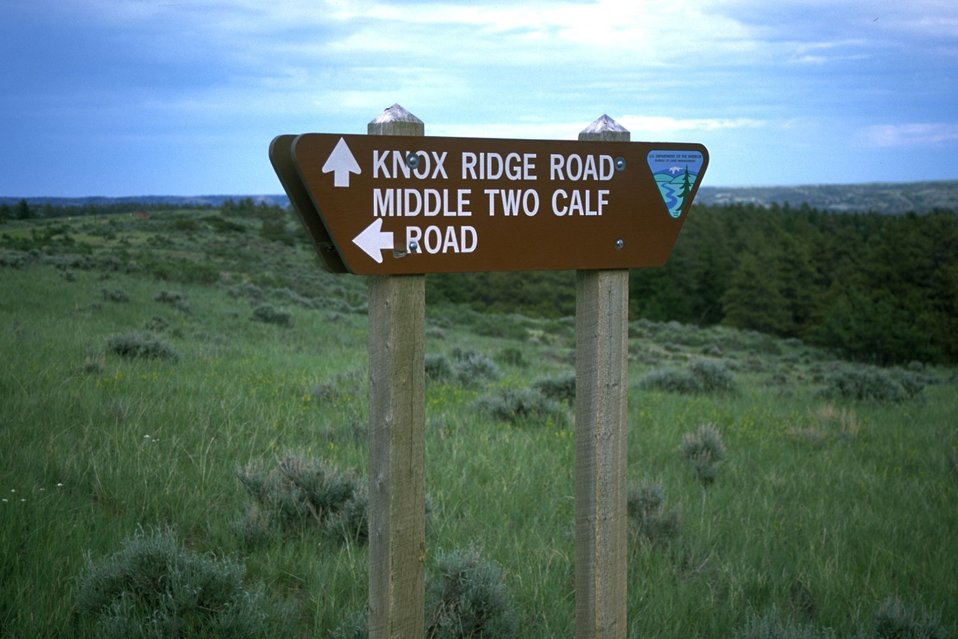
Direction sign